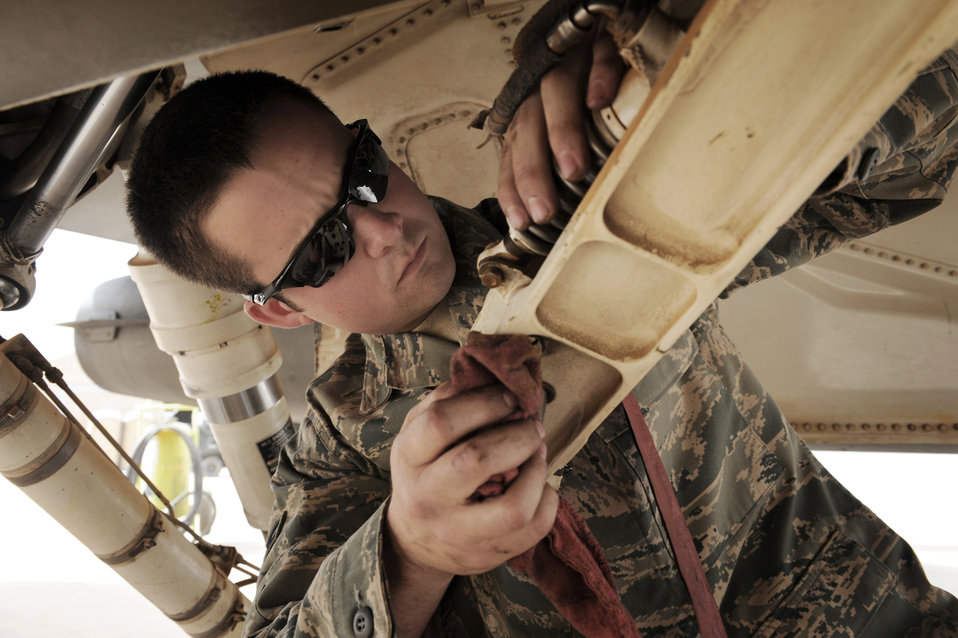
Checking it twice

Airman 1st Class Jay Costner performs a pre-flight inspection on an F-16 Fighting Falcon June 19 at Joint Base Balad, Iraq. During the inspection, he looks for any cracks and obvious damage on the aircraft. Airman Costner is an F-16 crew chief with the 332nd Expeditionary Aircraft Maintenance Squadron, and deployed from Spangdahlem Air Base, Germany.